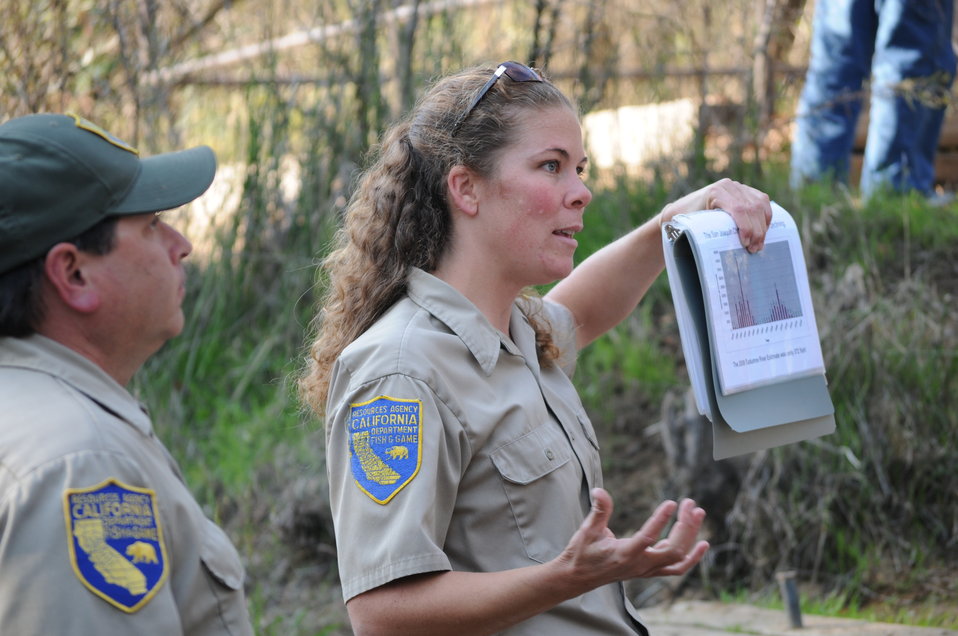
KNIGHT’S FERRY, Calif. (Nov. 16, 2010) – California Department of Fish and Game biologists present statistics on the annual spawning numbers of Chinook salmon to attendees at the second annual Stanislaus River Salmon Festival, hosted by the U.S. Army Corps of Engineers Sacramento District’s Stanislaus River Parks here Nov. 14. An estimated 3,000 people attended the free, family-friendly event, which was aimed at educating young people on the protection efforts for salmon and its habitat.